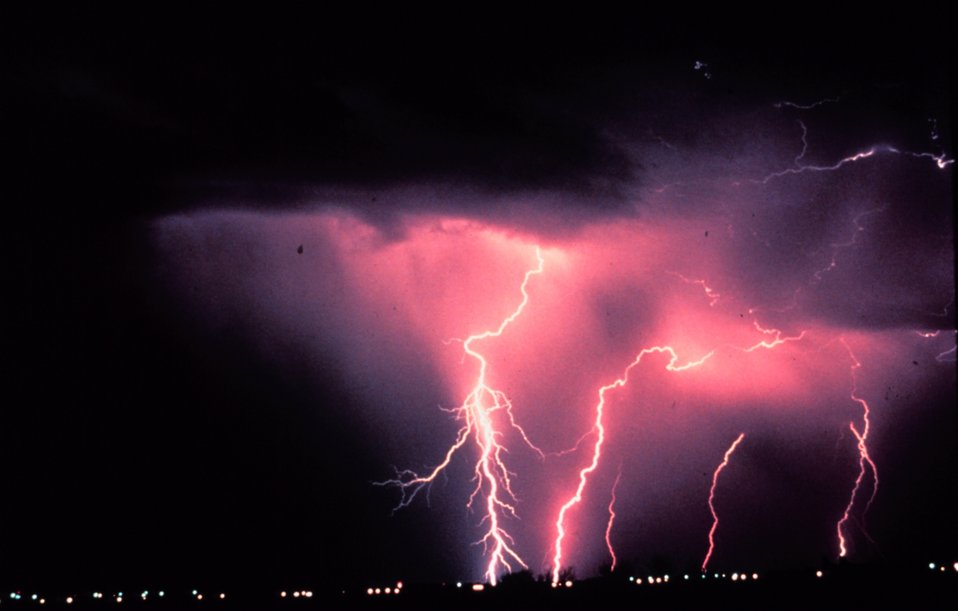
Time-lapse photography captures cloud-to-ground lightning during a night-time thunderstorm in Norman, Oklahoma - home of the NSSL.